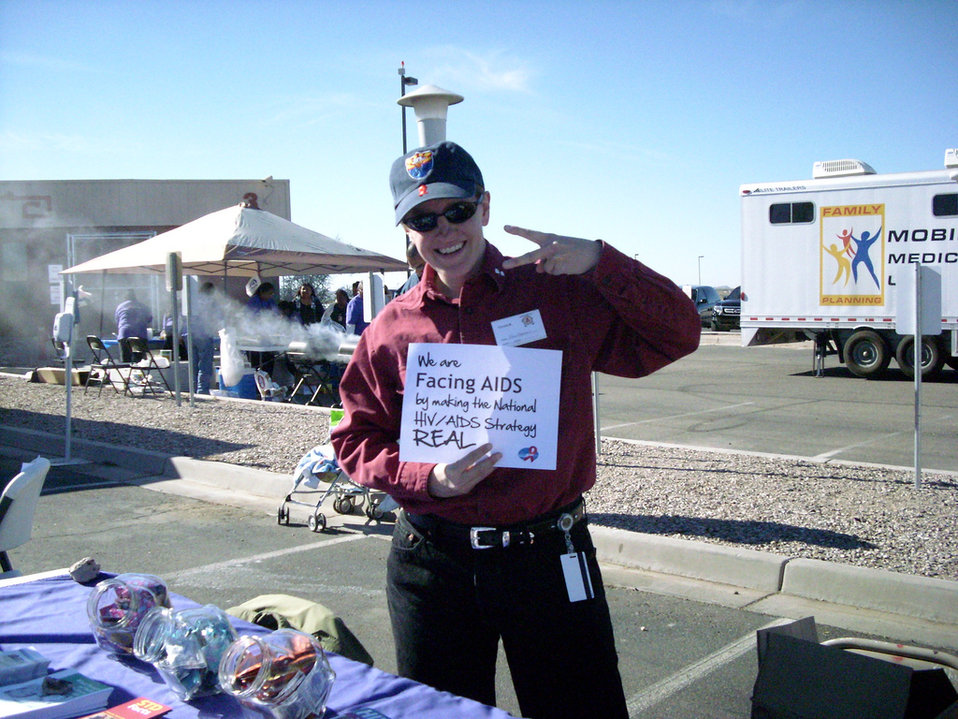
We are Facing AIDS through NHAS-45